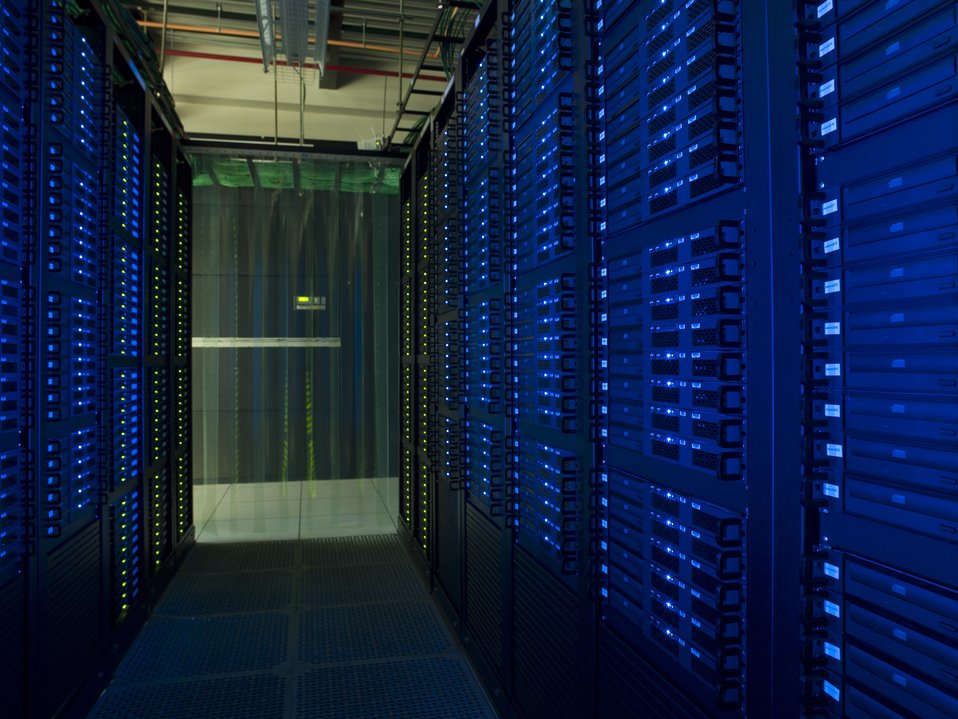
CABLE RACKS AT GRID COMPUTING CENTER, FERMILAB WITH BLUE LIGHTS.

Grid computing is a form of distributed computing in which multiple clusters of nodes work together to complete tasks. Physics submit jobs, or computer programs that physicists use to extract physics results from data, to the grid. The grid determines which resources are free and uses those nodes to process the job.